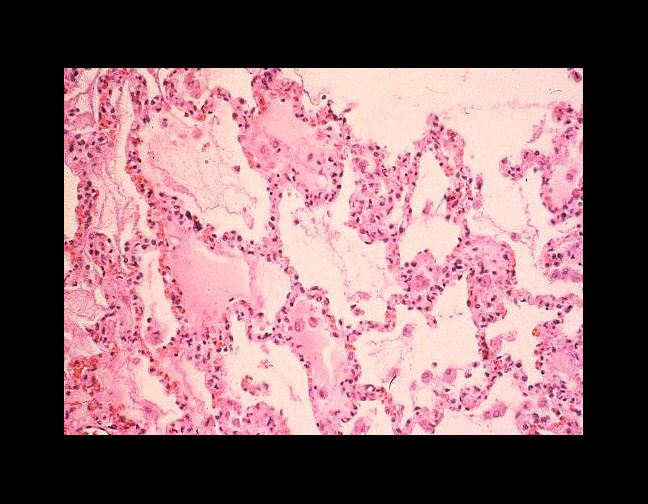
Histopathology of lung in Hantavirus pulmonary syndrome (HPS).